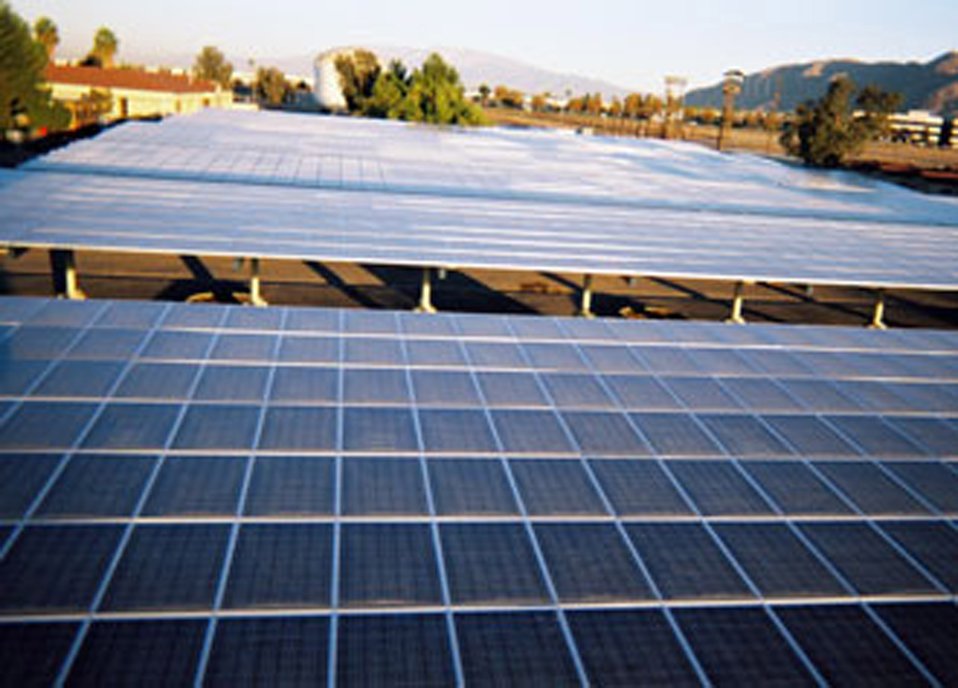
Solar energy helps power base

The 452nd Civil Engineer Squadron, March Air Reserve Base, recently completed a photovoltaic array project that broke ground almost one year ago. It has a capacity of 413.38 kilowatt-hours, sits atop two carports on the base and has a price tag of $4.5 million, which should be recovered in 10 years.